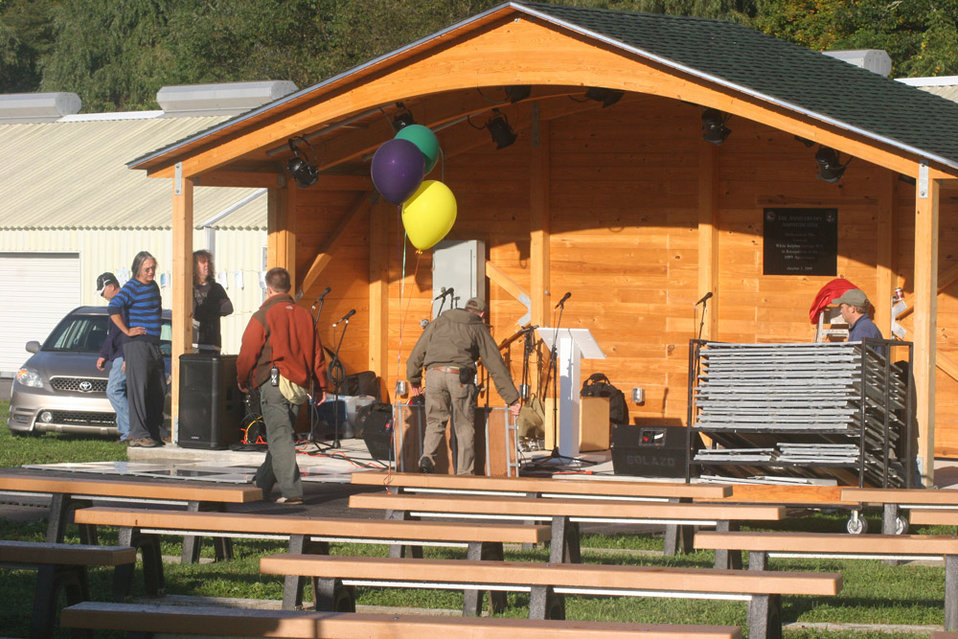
Freshwater Folk Festival (2)